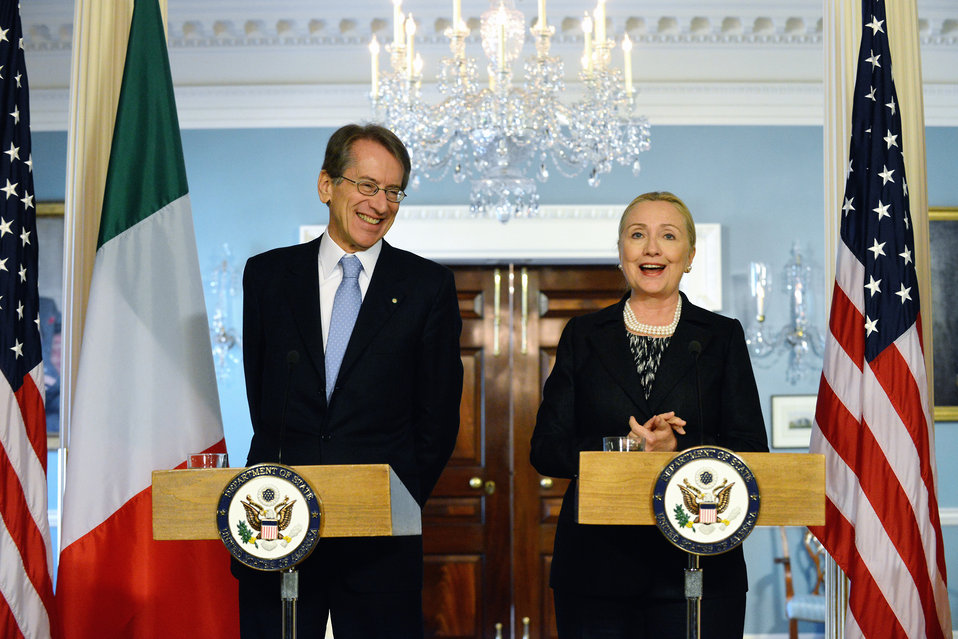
Secretary Clinton and Italian Foreign Minister Italian Foreign Minister Giulio Terzi di Sant'Agata Address Reporters

U.S. Secretary of State Hillary Rodham Clinton and Italian Foreign Minister Giulio Terzi di Sant'Agata address reporters after their bilateral meeting at the U.S. Department of State in Washington, D.C., October 12, 2012.